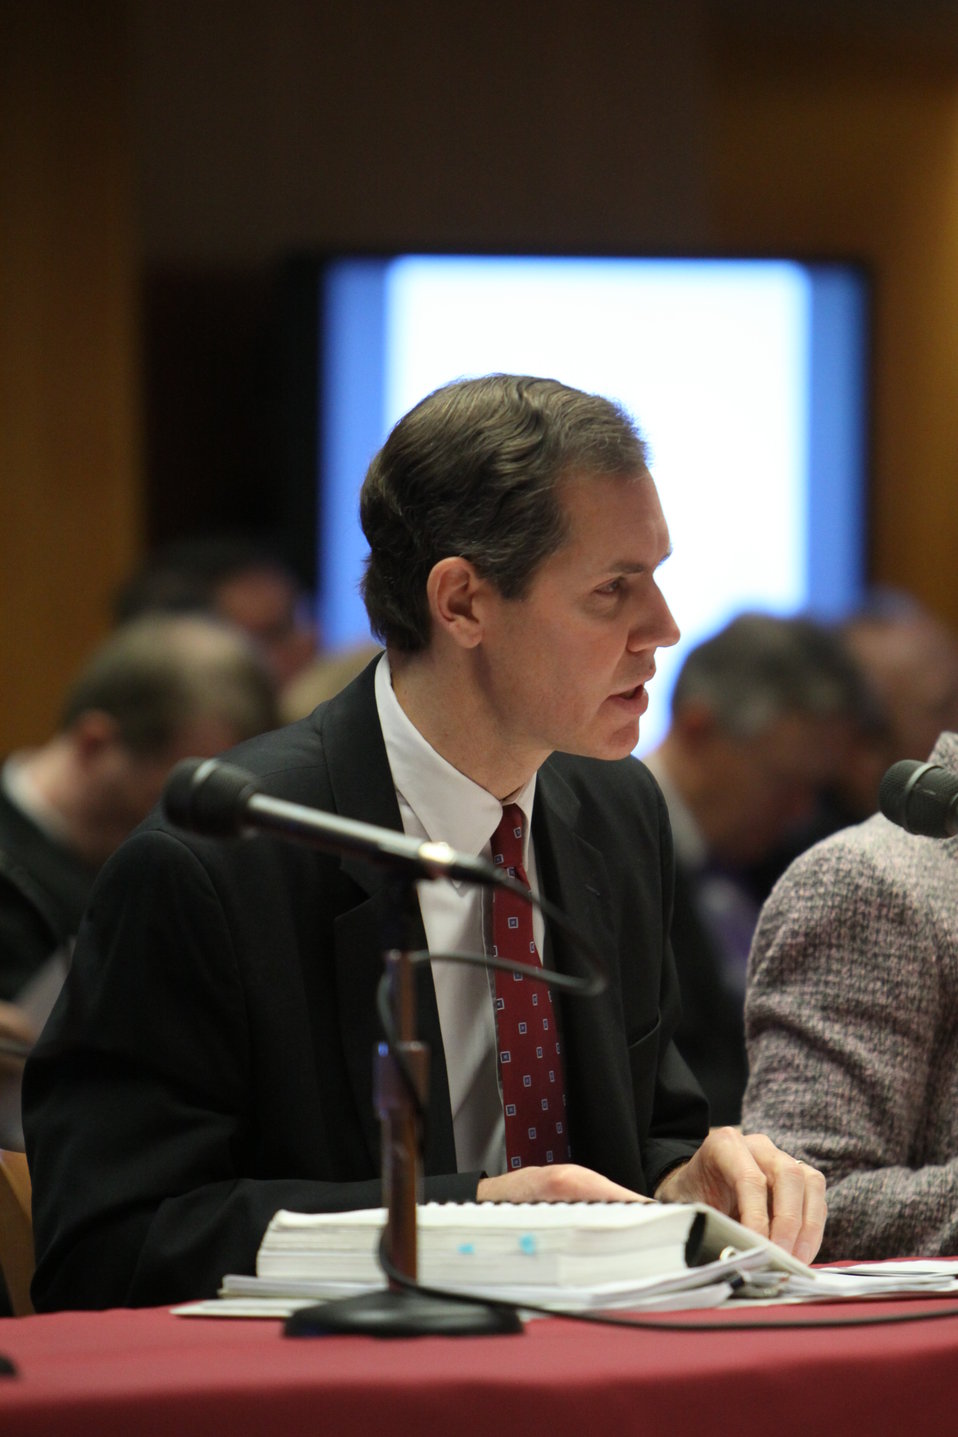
Austin Schlick, General Counsel, FCC